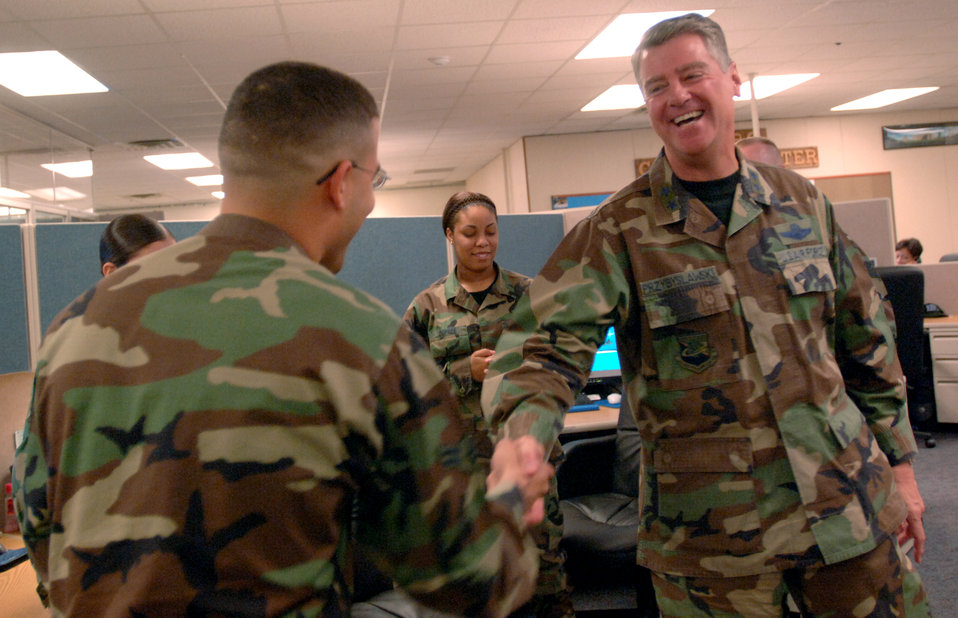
Personnel Services Delivery System initiative begins

Maj. Gen. Tony Przybyslawski jokes with Airman 1st Class Emmanuel Mercado after attending the launch ceremony of the Personnel Service Delivery System, Friday, March 31, 2006, at Randolph Air Force Base, Texas.